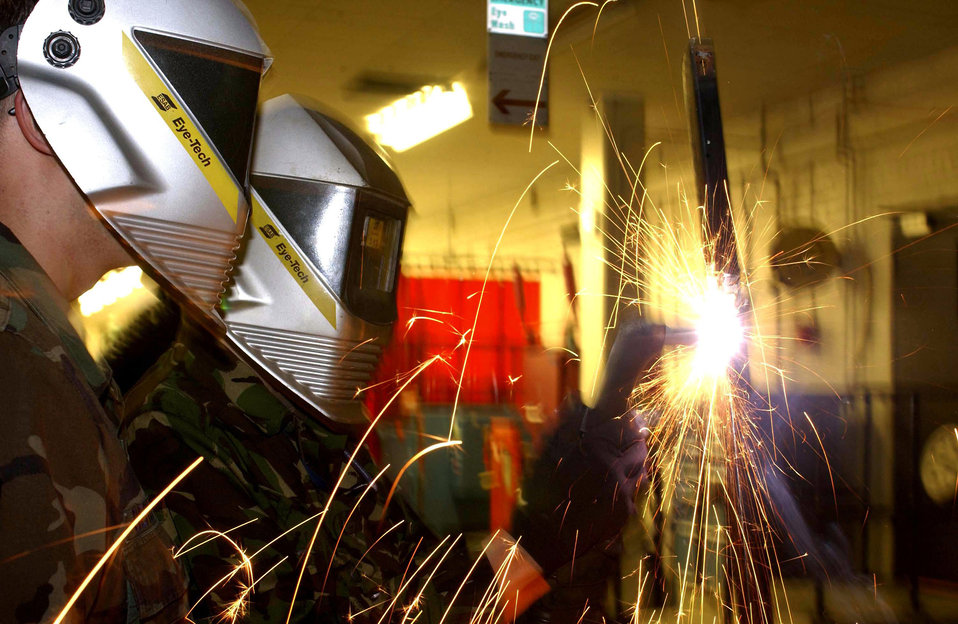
Men of steel

ROYAL AIR FORCE LAKENHEATH, England -- Tech. Sgt. Thomas Deruyter, left, supervises Michael Schunke, a British Royal navy ROTC cadet midshipman, as he attempts to cut through a steel rod with a plasma cutter here Aug. 4. Sergeant Deruyter is assigned to the 48th Equipment Maintenance Squadron.